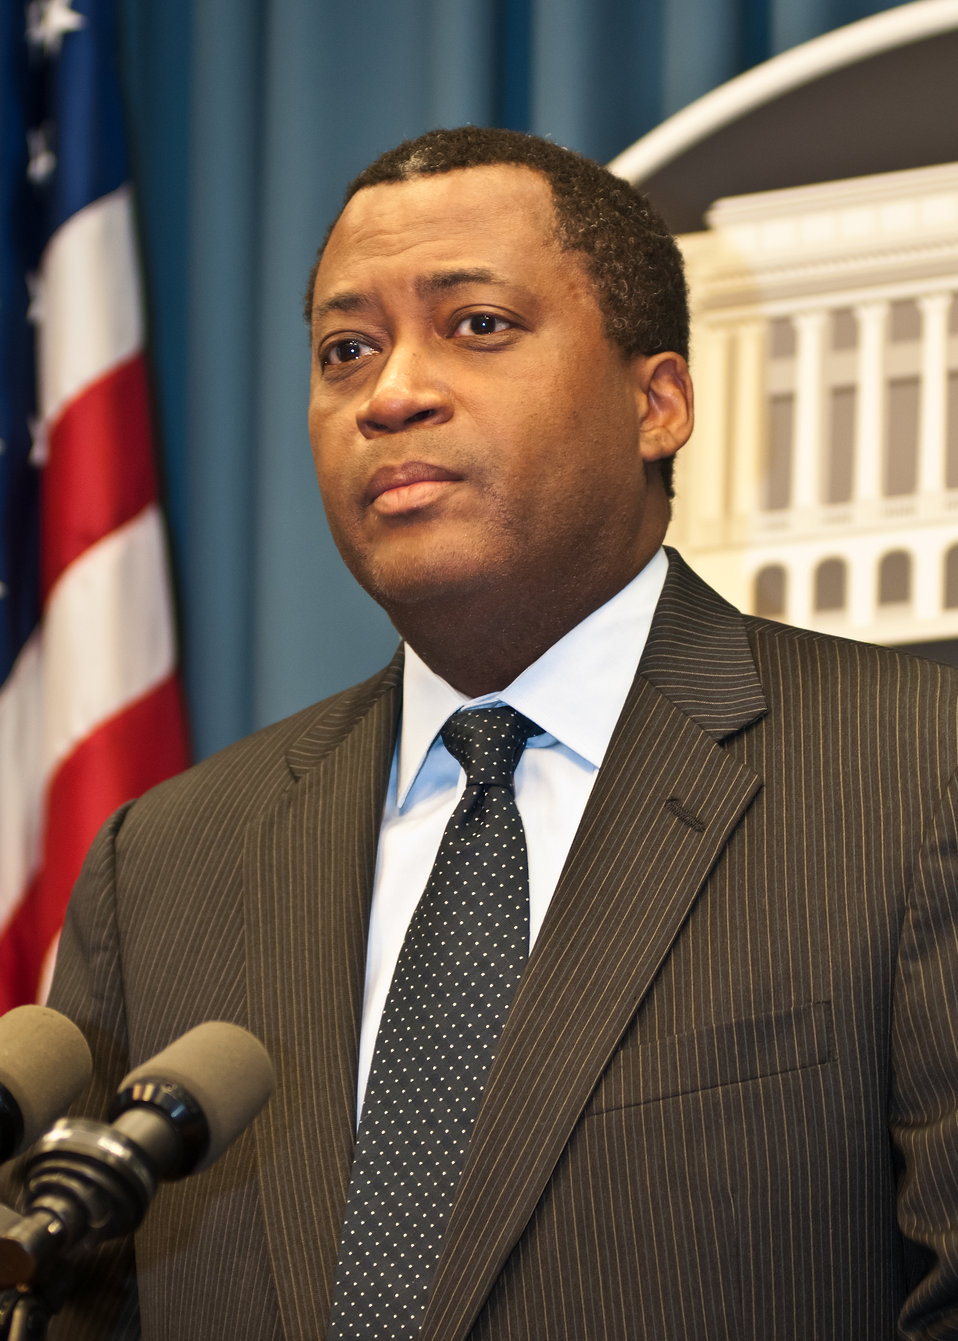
Agriculture Assistant Secretary for Civil Rights Dr. Joe Leonard welcomes United States Department of Agriculture (USDA) Hispanic Association of Colleges and University (HACU) and Tribal College summer interns during their orientation at USDA in Washington, DC, Monday, Jun. 6, 2011. The HACU/Tribal College National Internship Program represents more than 400 colleges and universities committed to higher education in the U.S., Puerto Rico, Latin America, Spain and Portugal and places student interns each year with federal agencies in Washington, DC or in field offices around the country.